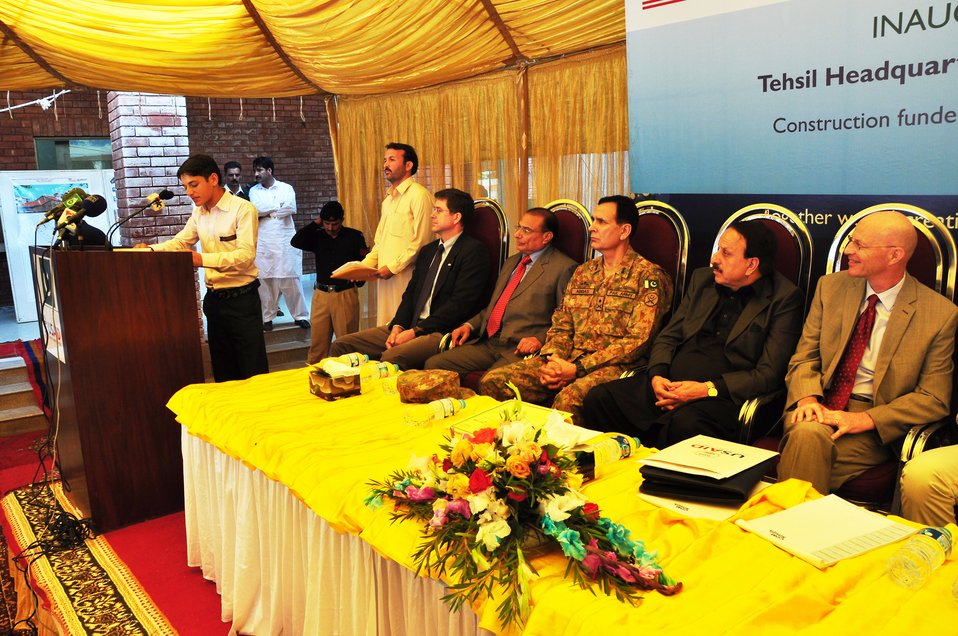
Dhirkot Reconstructed Hospital Inauguration Pakistan Reconstruction Program 08